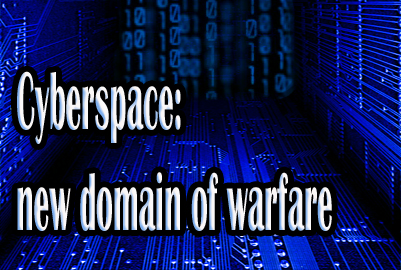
Cyberspace